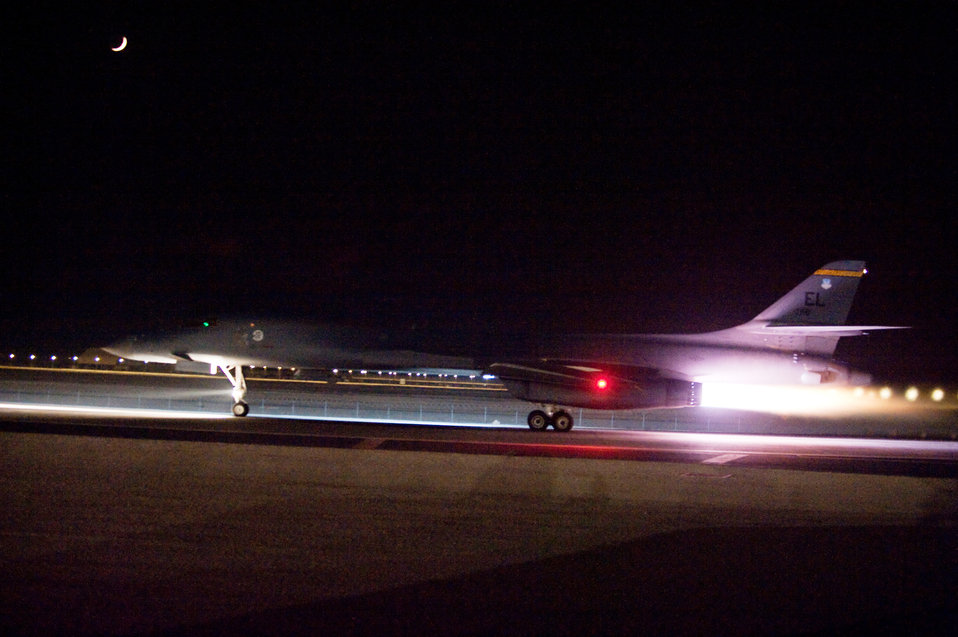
Lancer power

A B1-B Lancer takes off from an air base in Southwest Asia, Oct. 21, 2009, on a combat mission. The B-1B is deployed from Ellsworth Air Force Base, S.D., in support of operations Iraqi Freedom and Enduring Freedom.